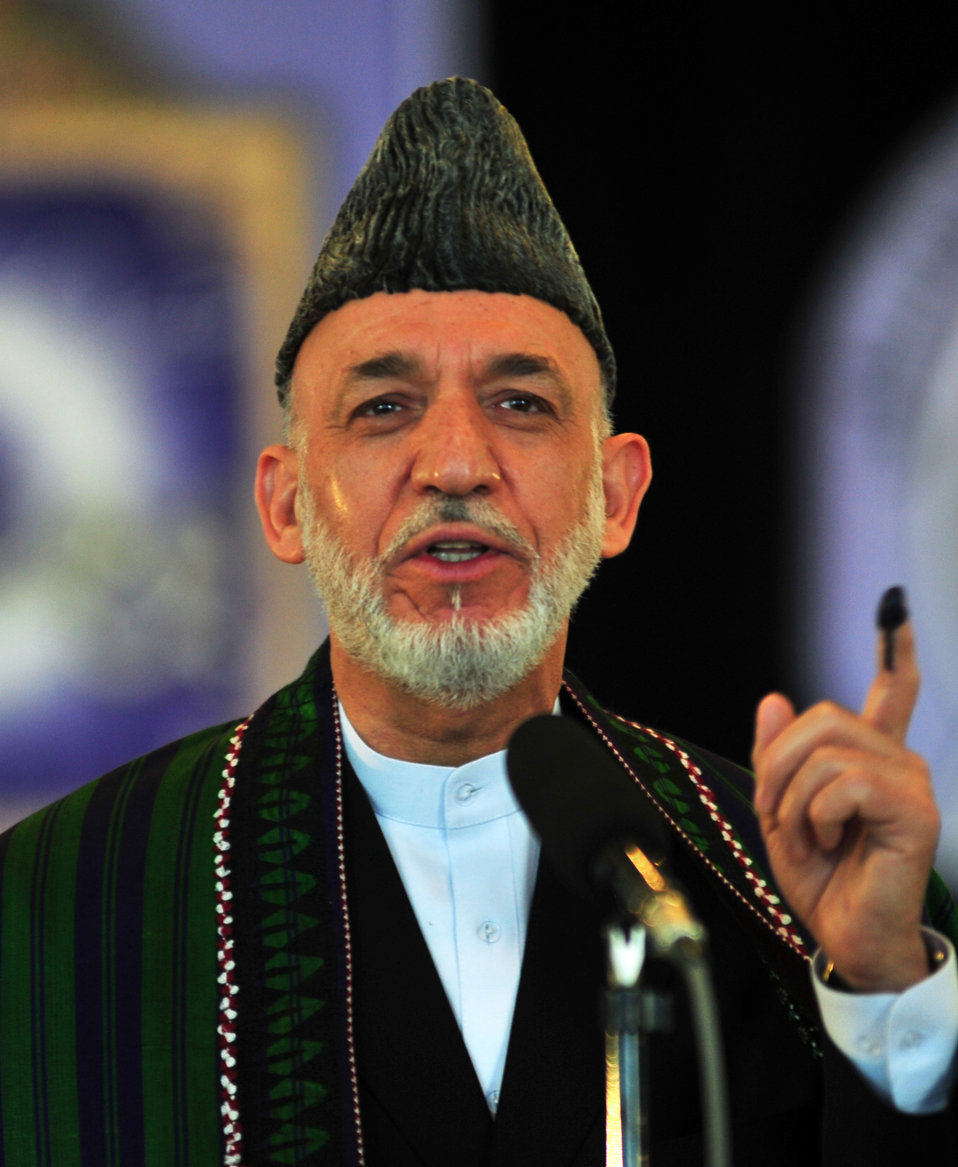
President Hamid Karzai speaks to the journalists in Kabul after casting his vote. He said Afghans should vote for the candidate of their choice and called the vote “a step towards progress and democracy.”